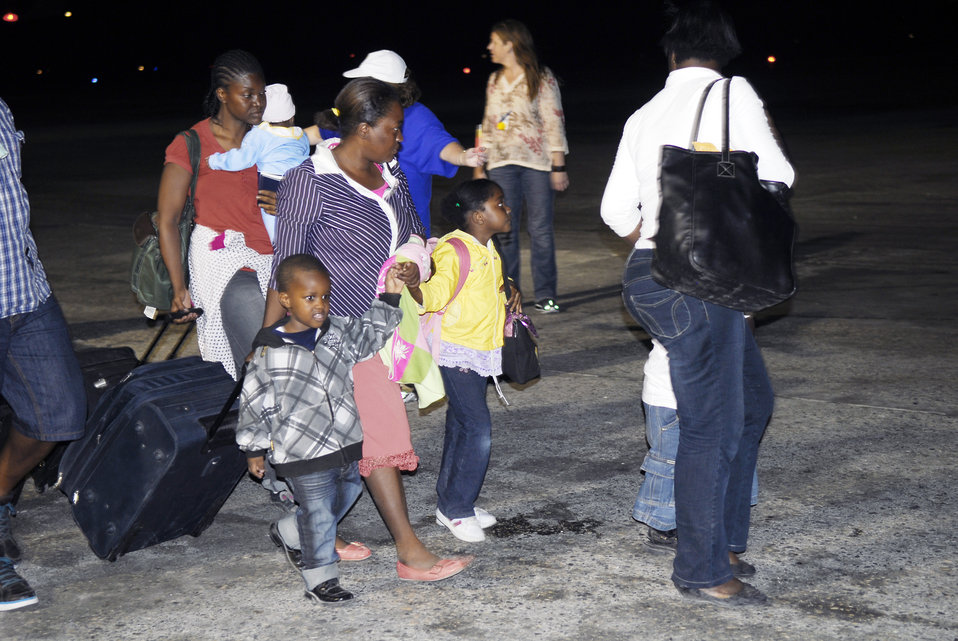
AMC provides airlift for Americans in Haiti

American citizens displaced by the recent earthquake walk towards a C-17 Globemaster III for transport out of Port-au-Prince, Haiti, Jan. 19, 2010. The same C-17 that delivered supplies from Pope Air Force Base, N. C., to Haiti completed the return trip with a brief stop in Florida to deliver passengers.